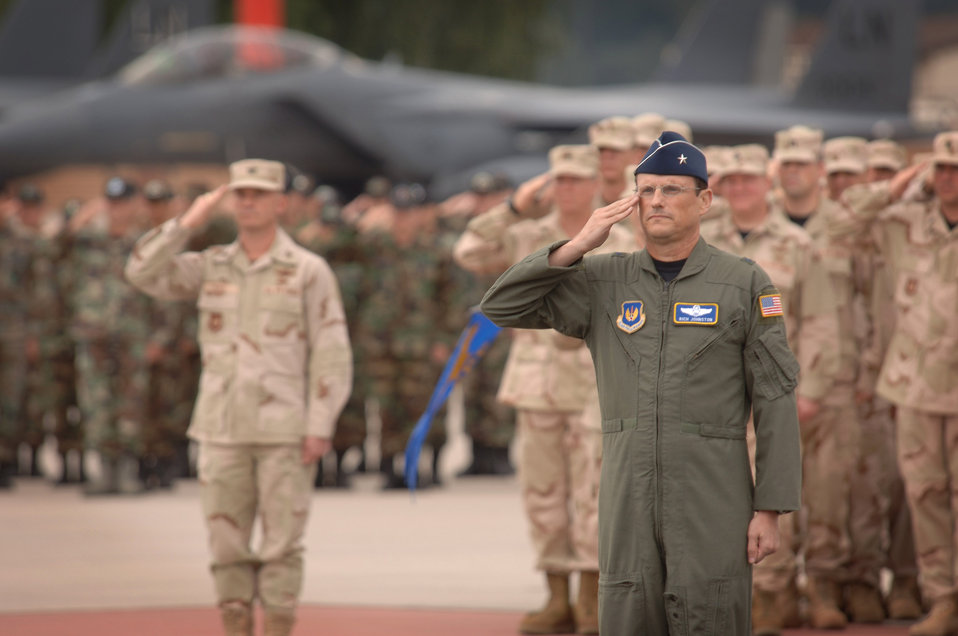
Ramstein Airmen observe Sept. 11

Brig. Gen. Richard C. Johnston and Airmen assigned to Ramstein Air Base, Germany, salute during the Sept. 11 memorial ceremony at Ramstein Air Base, Germany. The ceremony began at 2:46 p.m. central European time, exactly six years to the minute following the first attack on the World Trade Towers in New York City. General Johnston is commander of the 86th Airlift Wing.